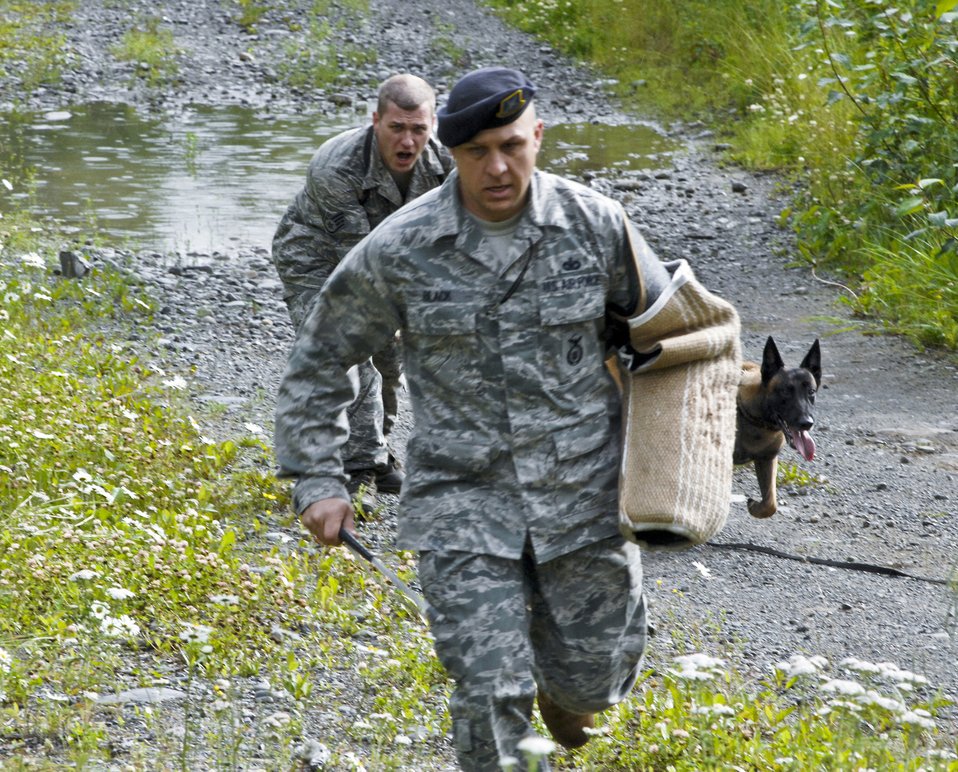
Working dogs at Elmendorf

Staff Sgt. Greg Maatta yells for his